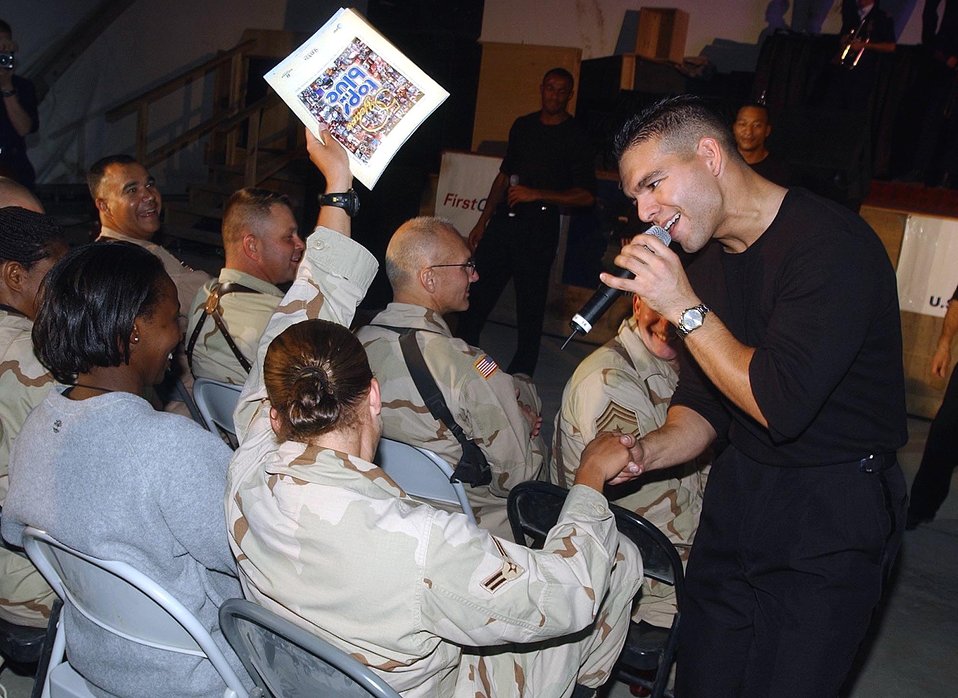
Entertaining the troops

BAGRAM AIR BASE, Afghanistan -- Airman 1st Class Brian Pop sings to Airman 1st Class Ashanti Richardson during the Tops in Blue performance here Oct. 11. Pop is a Tops in Blue vocalist from the 49th Aircraft Maintenance Squadron at Holloman Air Force Base, N.M. Richardson is deployed here from Spangdahlem Air Base, Germany.